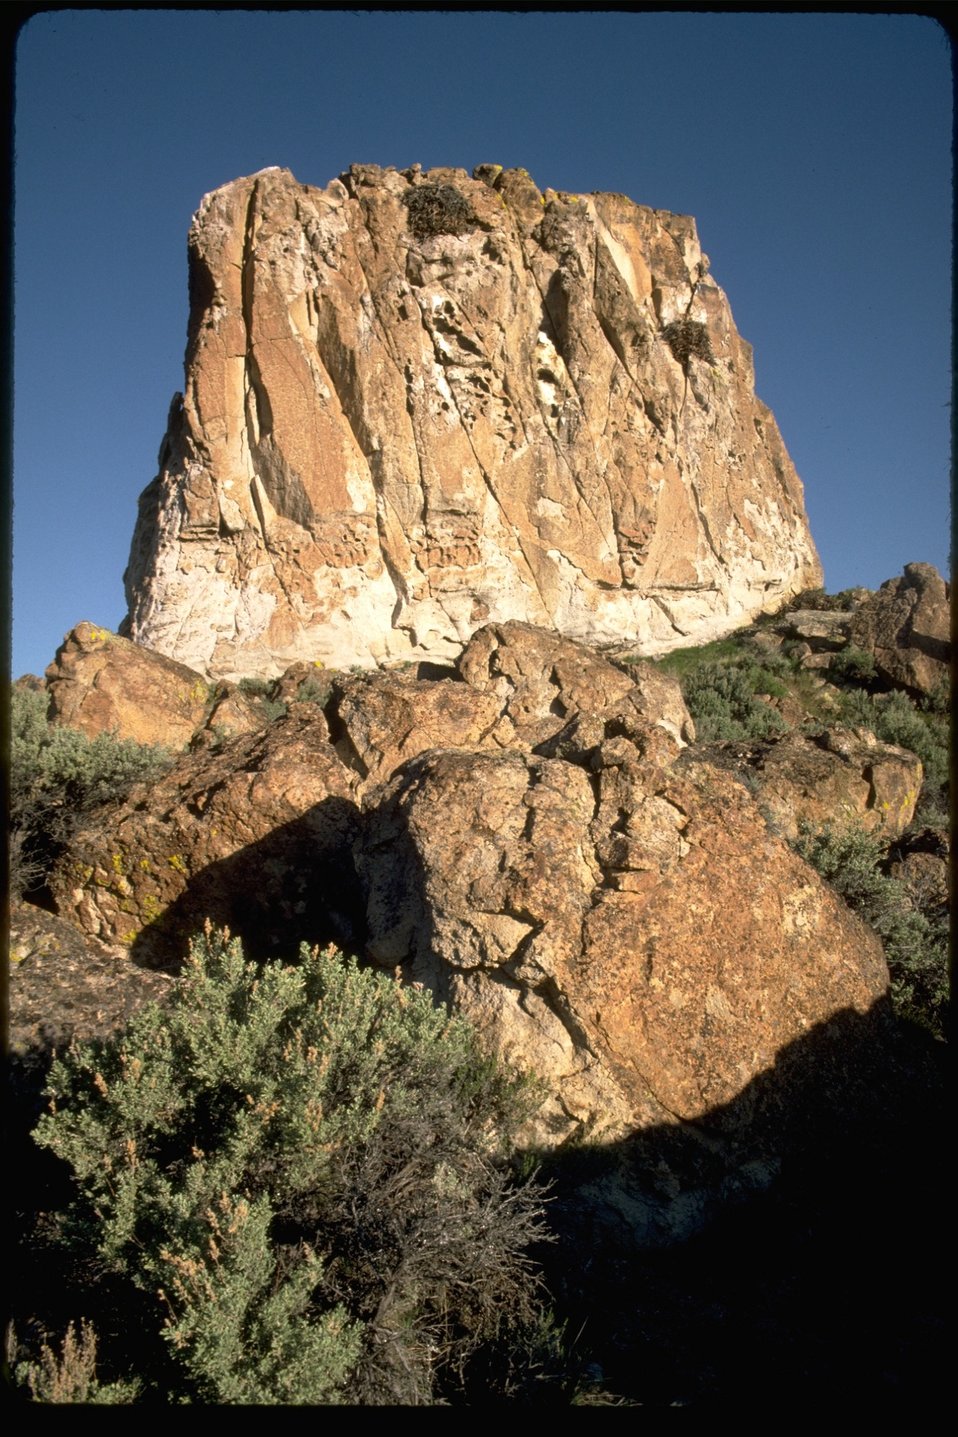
Large rock formation in the Spalding Wilderness Study Area. OR 1-139